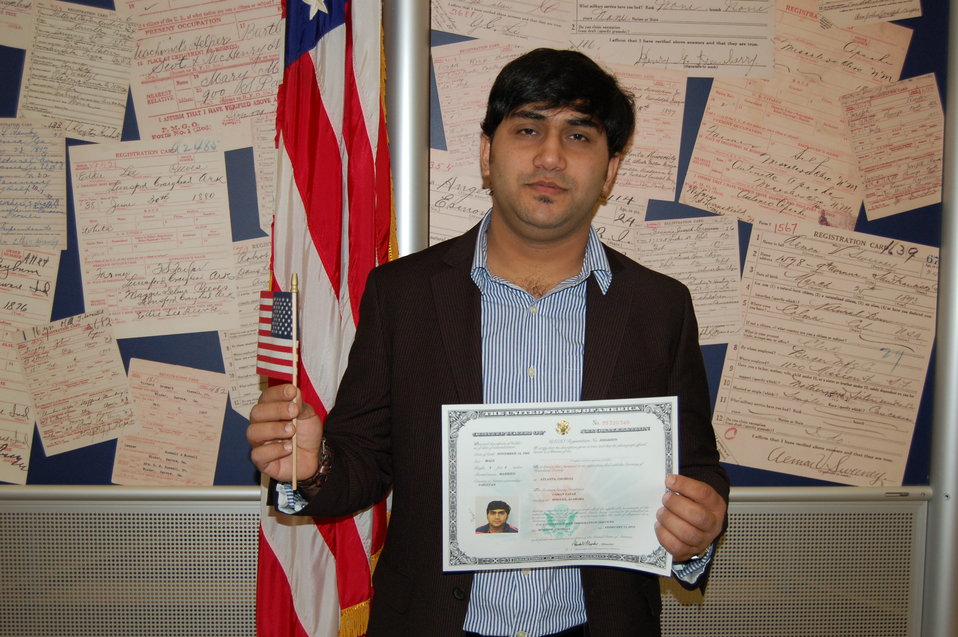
New Citizens